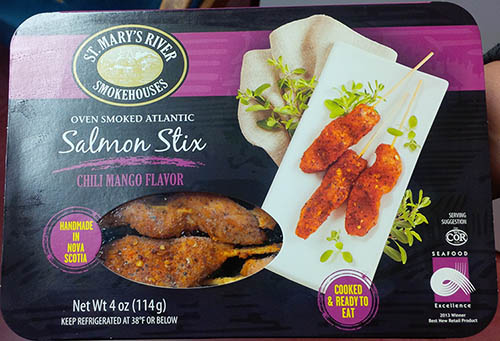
RECALLED – Oven Smoked Atlantic Salmon Stix, Chili Mango Flavor

January 22, 2014 – Product Recall – Lochiel Enterprises Limited Recalls St Mary’s River Smokehouses Oven Smoked Salmon Stix, Chili Mango Flavor Because of Possible Health Risk.